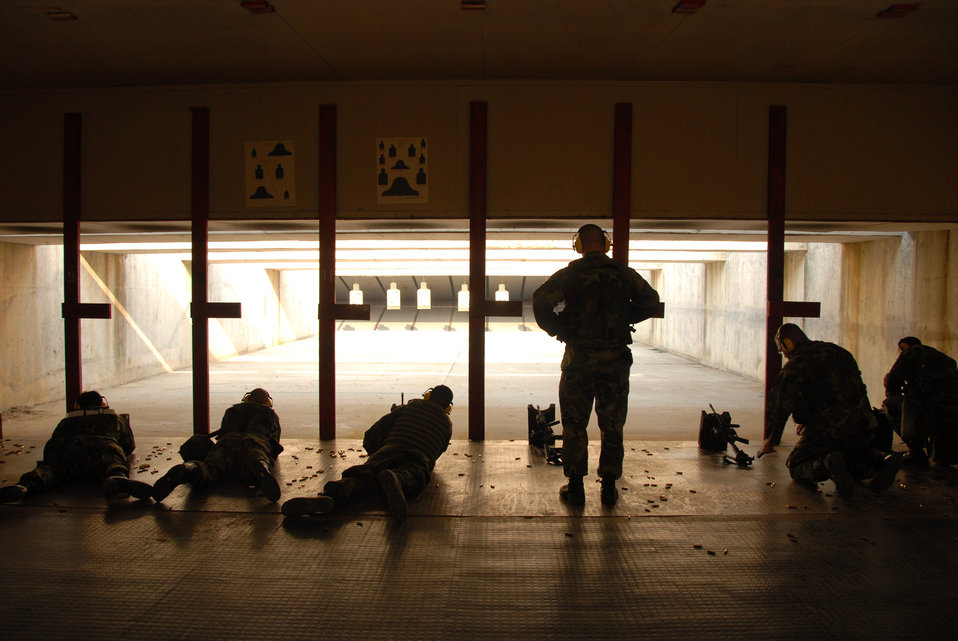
Keep firing

Airmen test their skills at the Osan Air Base, South Korea, shooting range March 15. .